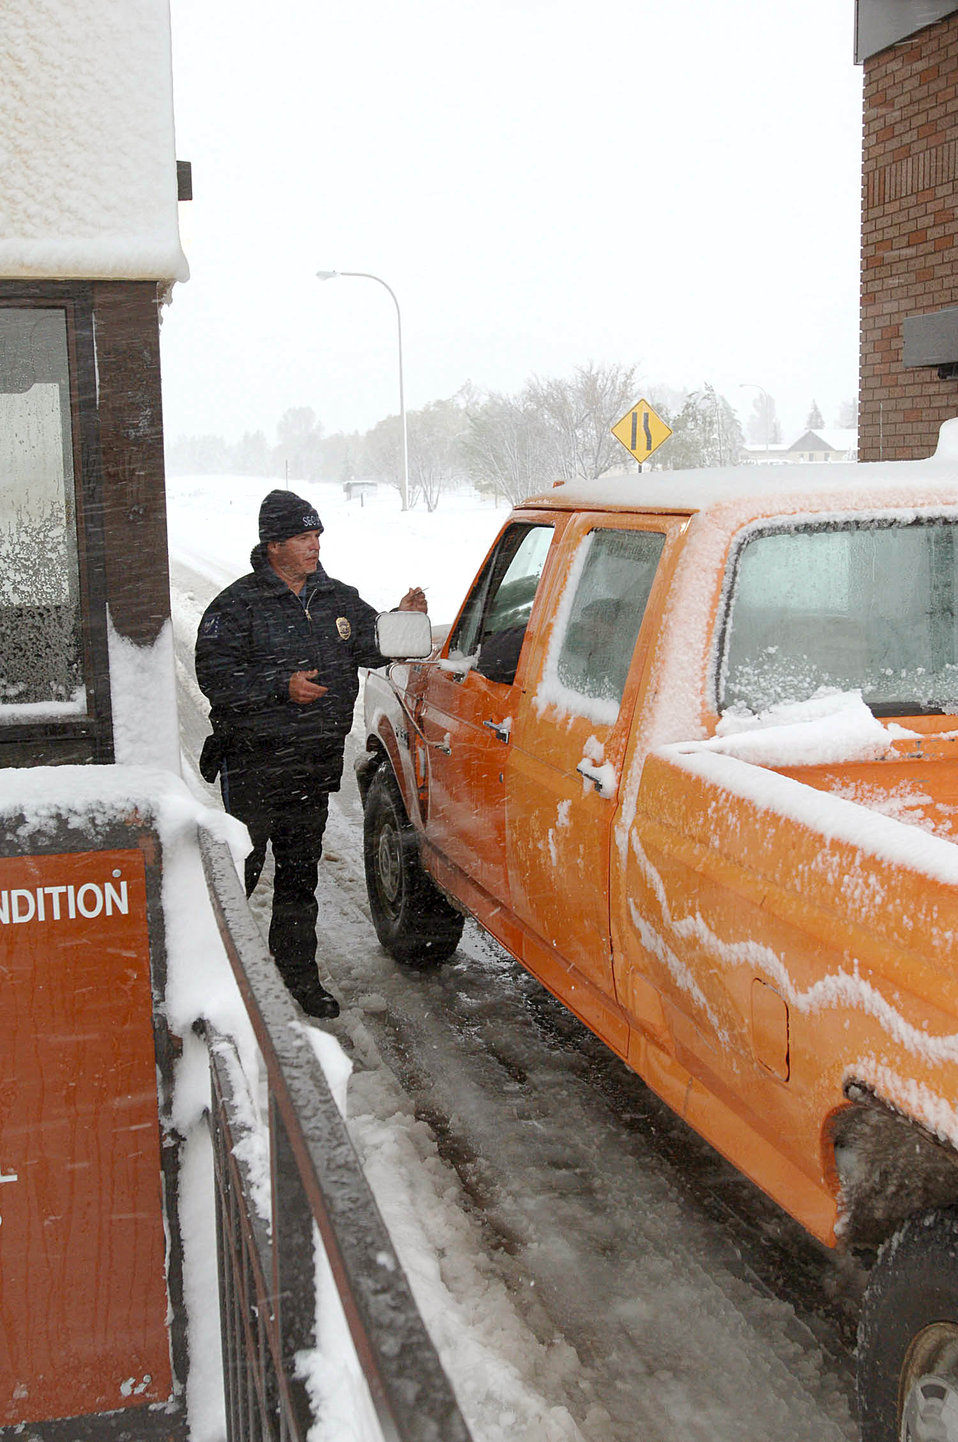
First snow

MINOT AIR FORCE BASE, N.D. -- Keith Anderson checks identification cards at the main gate here after the first snowfall of the year. As of 11 a.m. on Oct. 5, the base had received 5 inches of snow to accompany 45-mph winds and a temperature of 32 degrees. Mr. Anderson is a gate guard with the 5th Security Forces Squadron.